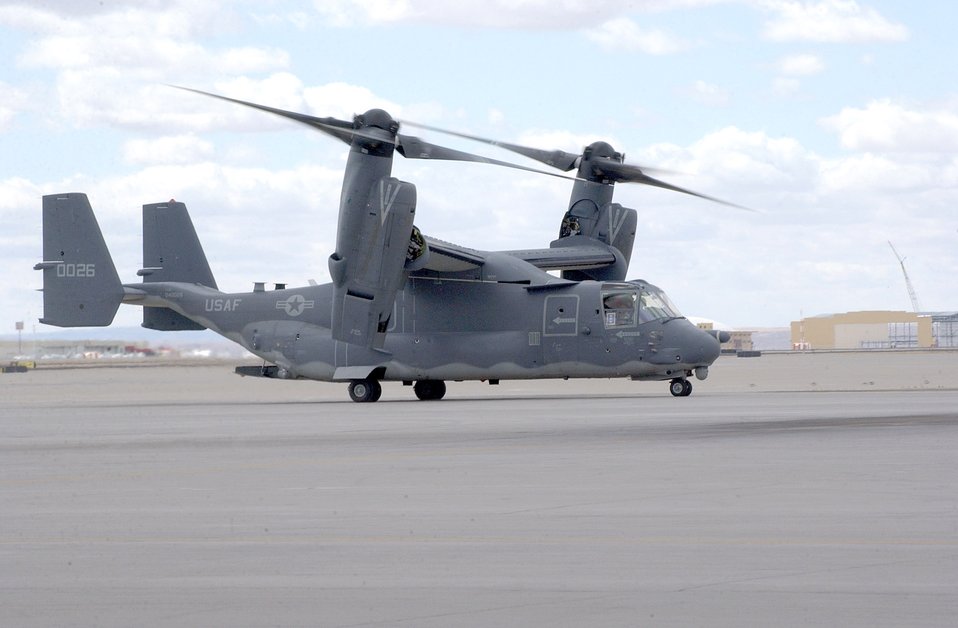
Osprey gets new nest

Air Force Special Operations Command's first CV-22 Osprey arrives at Kirtland Air Force Base, N.M., Monday, March 20, 2006. The aircraft will be flown by Airmen with the 58th Special Operations Wing.